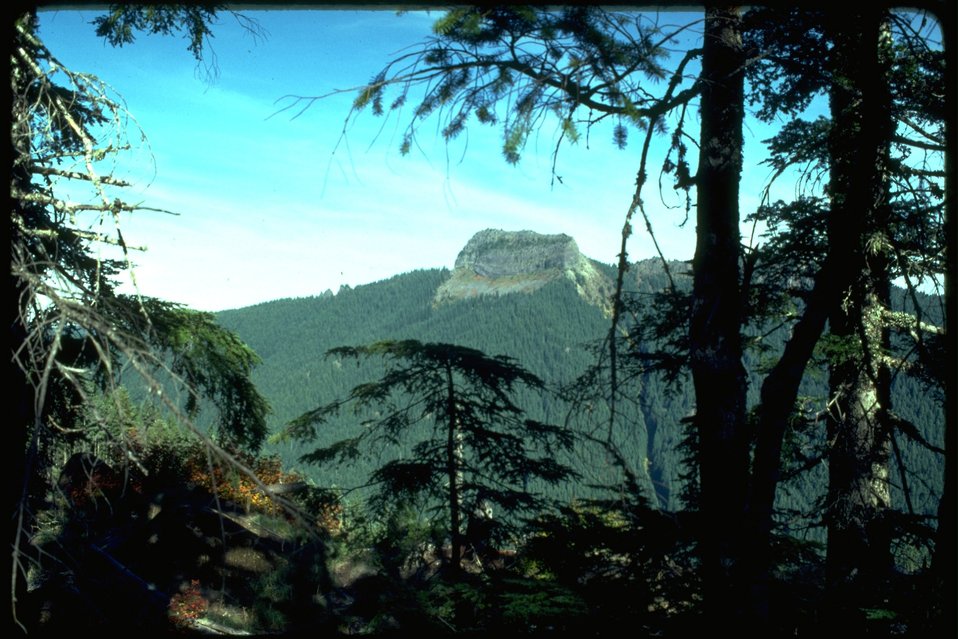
A scenic picture in the Table Rock Wilderness.